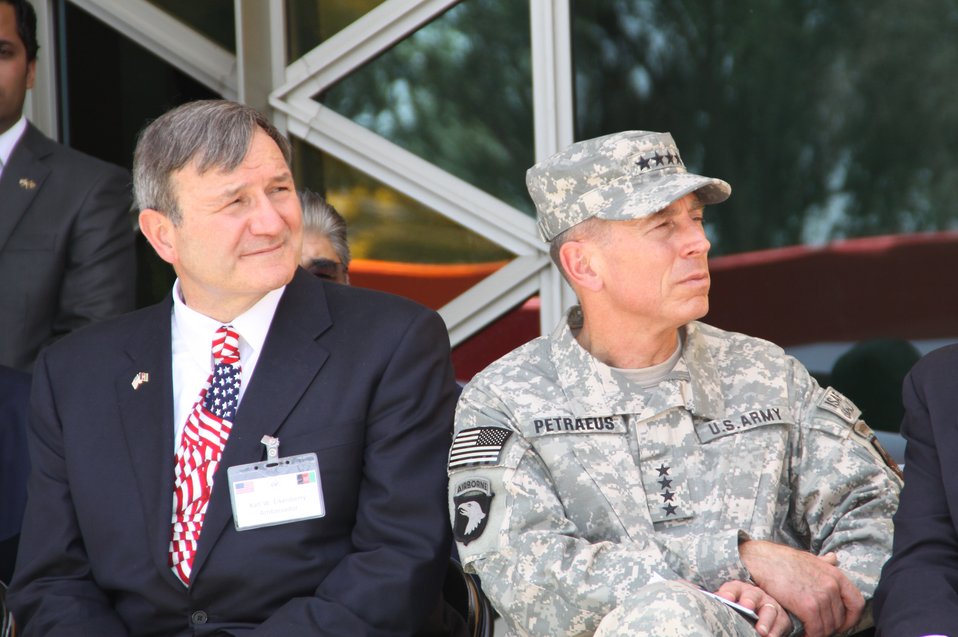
Kabul Official July 4th Celebration